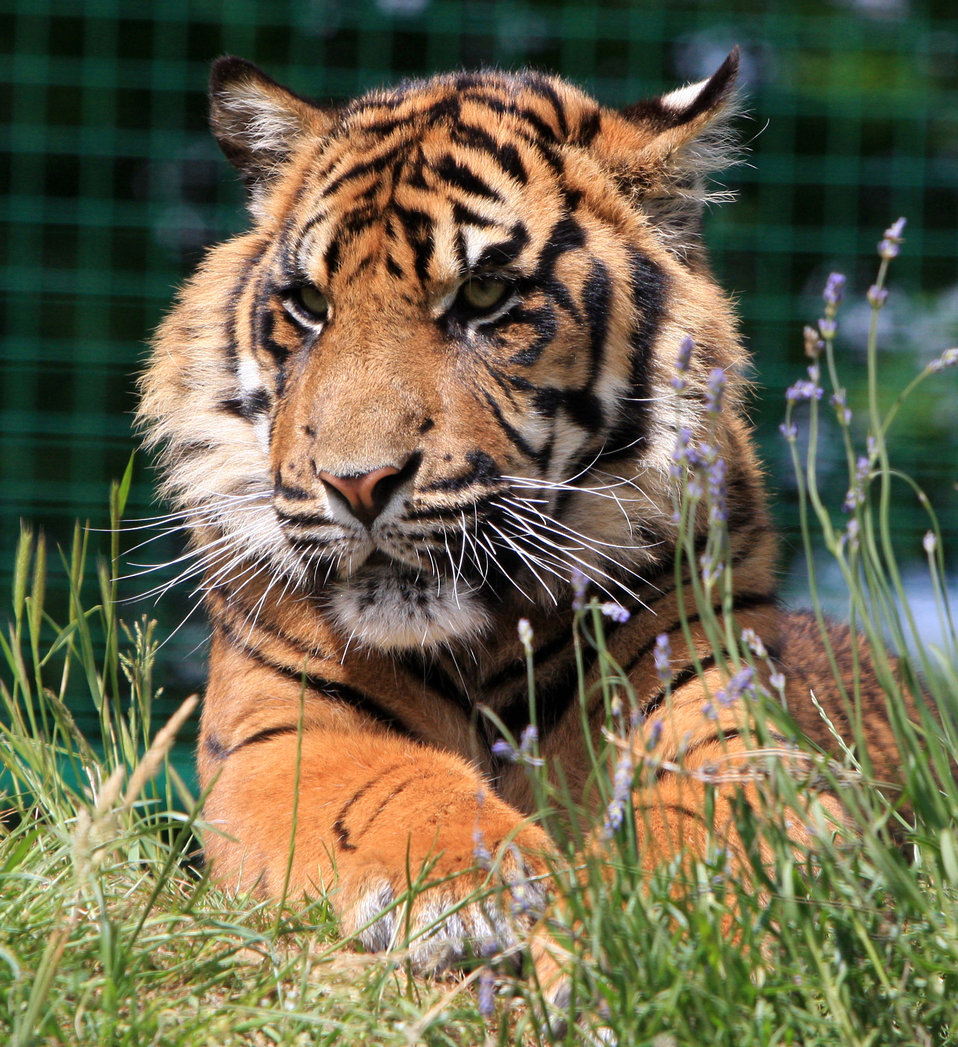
Tiger cub portrait

Cute little young sumatran tiger cub laying down in close-up.